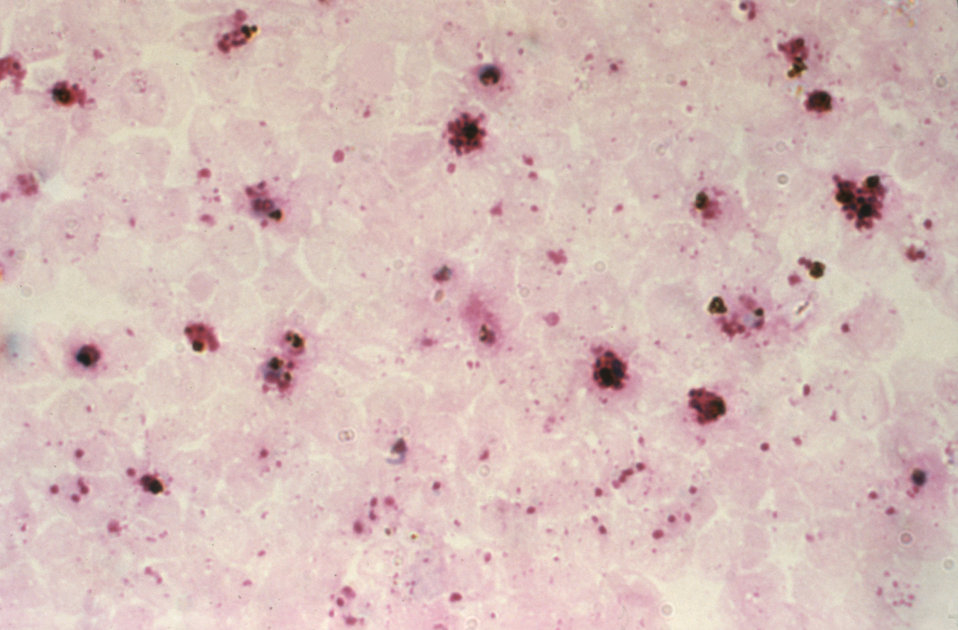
Giemsa stain shows an Aotus monkey's parasitized blood containing P. Falciparum taken after 48 hours of incubation.